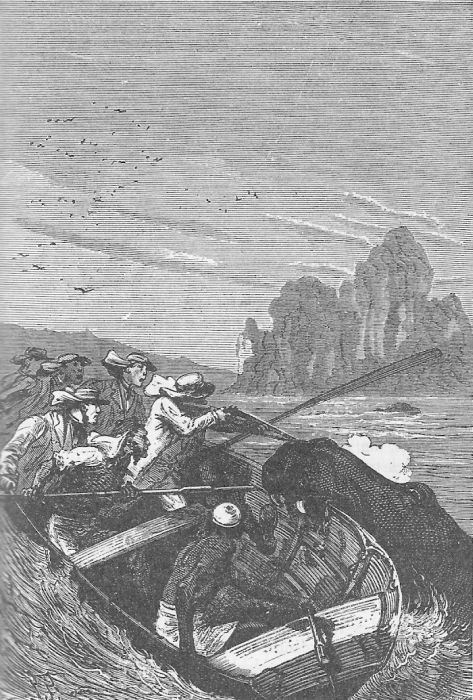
An illustration from Jules Verne's novel 'The Adventures of Three Englishmen and Three Russians in South Africa' (1870) drawn by Jules F√©rat. Polski: Ilustracja powie≈õci Juliusza Verne'a 'Przygody trzech Rosjan i trzech Anglik√≥w w po≈Çudniowej Afryce' (1870) autorstwa Julesa F√©rata. Fran√ßais†: Jules Verne: 'Aventures de trois russes et de trois anglais dans l‚ÄôAfrique australe' (1870), dessins par Jules F√©rat.